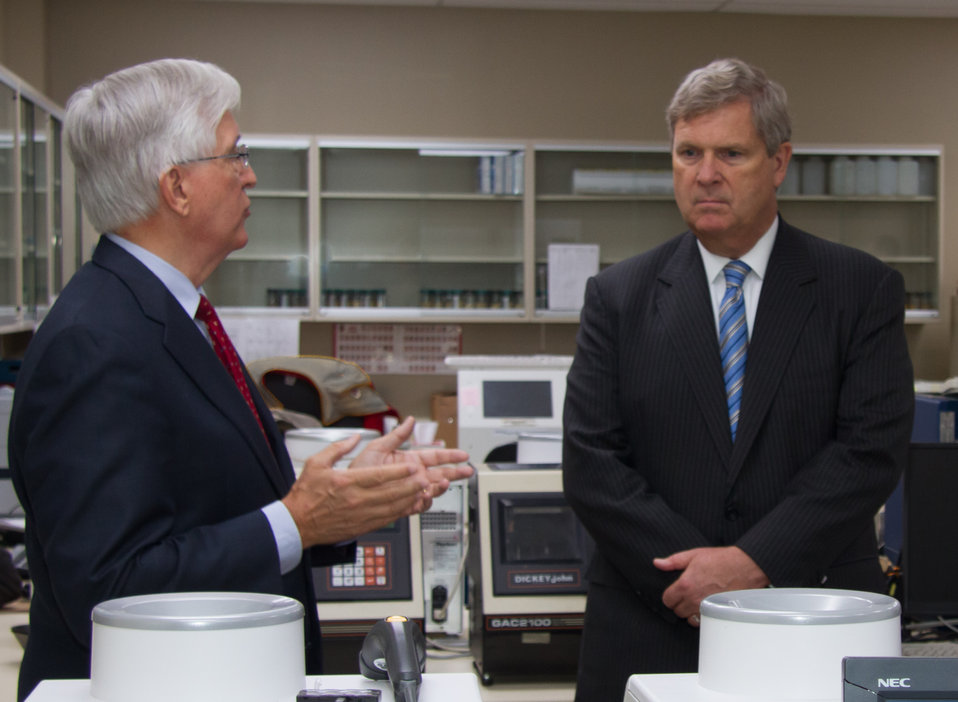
Dr. David Funk, (l), Grain Inspection, Packers and Stockyards Administration (GIPSA), Chief Scientist, explains the rationale for GIPSA's development of its Unified Grain Moisture Algorithm and adoption of new grain moisture measurement technology to Agriculture Secretary Tom Vilsack in Kansas City, MO, on Oct. 23, 2013.